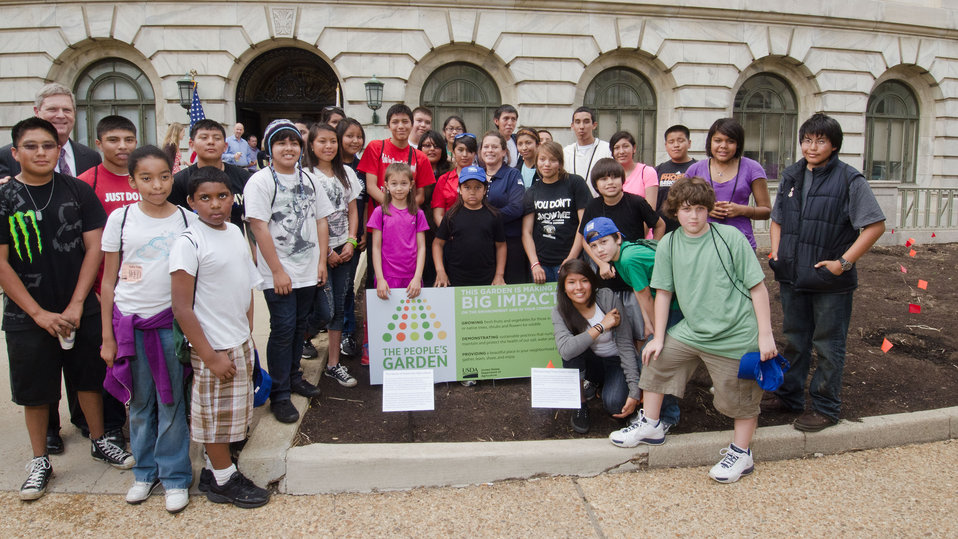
Agriculture Secretary Tom Vilsack (left rear of group) met with more than 30 Students from Eastern and Western Tribes, Southeast Alaska, and Tuba City, Arizona who came to the Nation’s Capitol to plant vegetable seeds that are indigenous to North America. The garden is called The Roots of American Agriculture, and is part of the Headquarters’ People’s Garden.